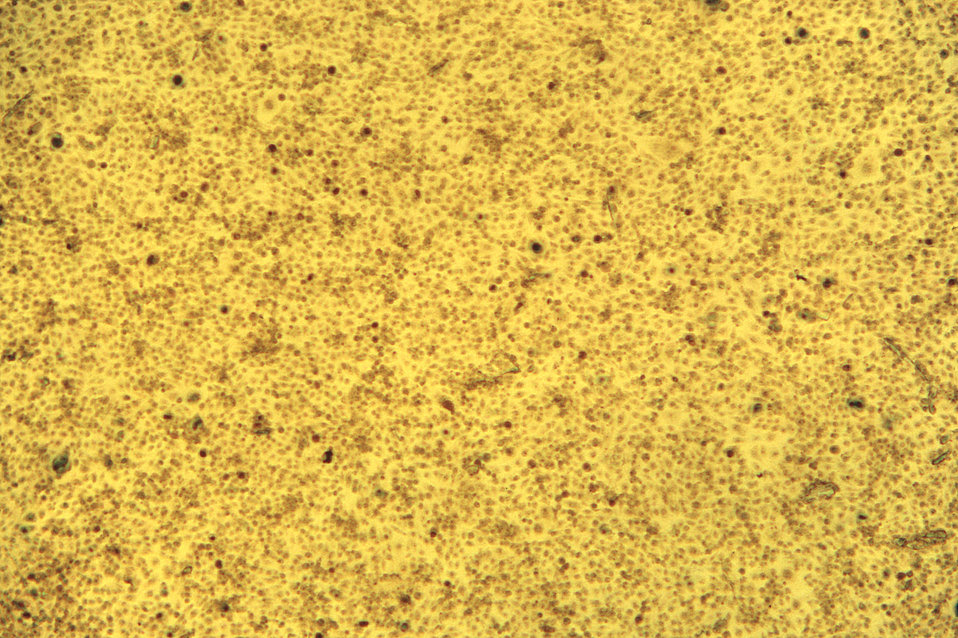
Under a low magnification of 12.5X, this photomicrograph reveals McCoy cell monolayers with Chlamydia trachomatis inclusion bodies.